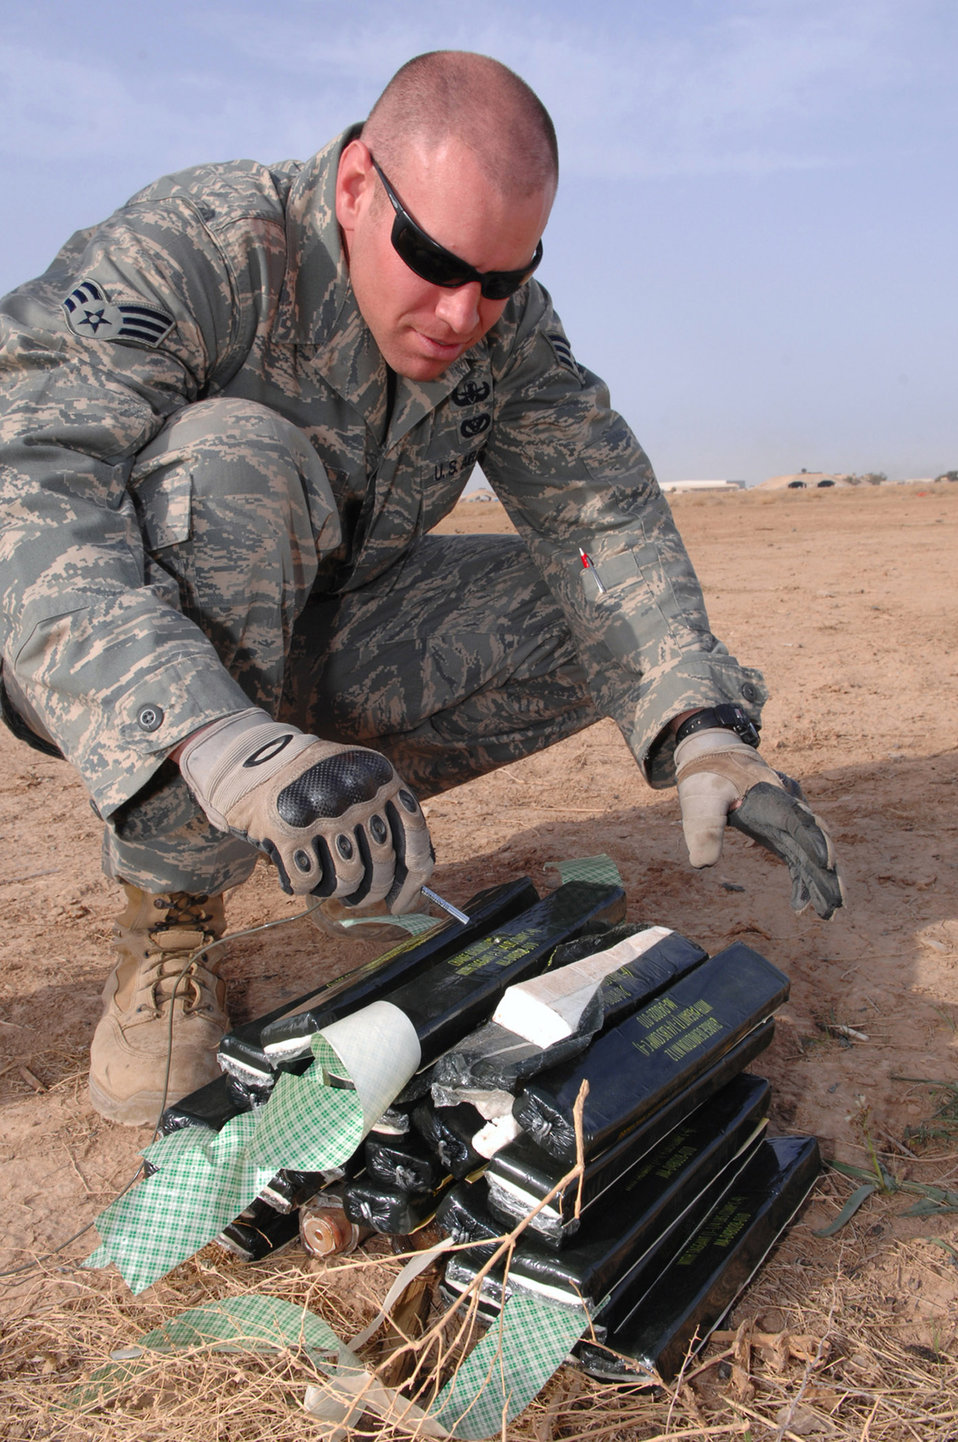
Blast off

Senior Airman Patrick Heltne places a blasting cap into C-4, an explosive substance, March 13 at Balad Air Base, Iraq. The blasting cap, which is attached to shock tubing, is used to initiate unexploded ordnance detonations from a safe distance. Airman Heltne is a 332nd Expeditionary Civil Engineer Squadron explosive ordnance disposal technician deployed from Ellsworth, S.D.